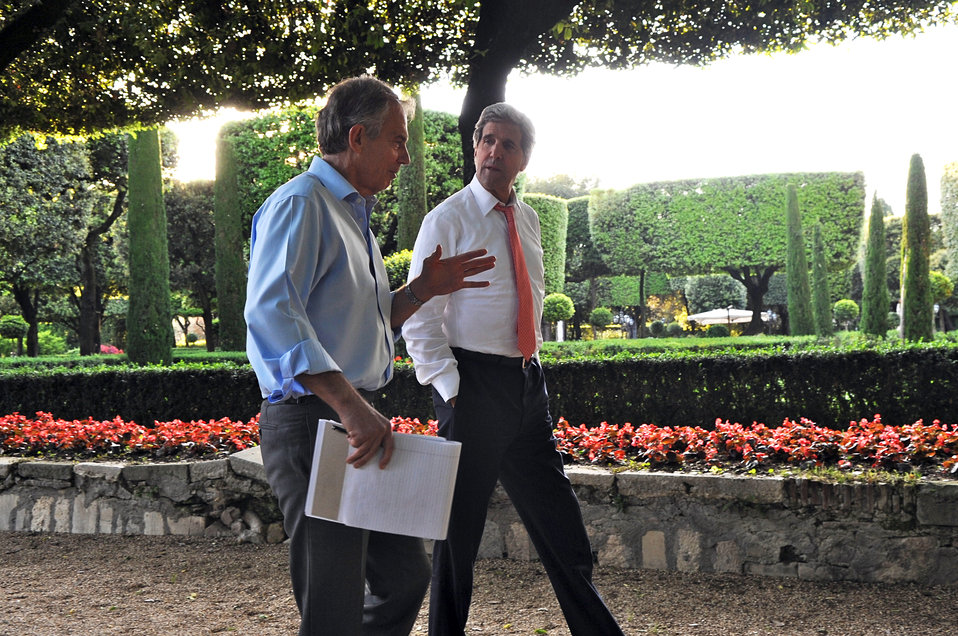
Secretary Kerry and Quartet Representative Blair Discuss Middle East Peace

U.S. Secretary of State John Kerry discusses Middle East peace with Quartet Representative Tony Blair at the Villa Taverna, the U.S. ambassador's residence in Rome, Italy, on May 9, 2013.